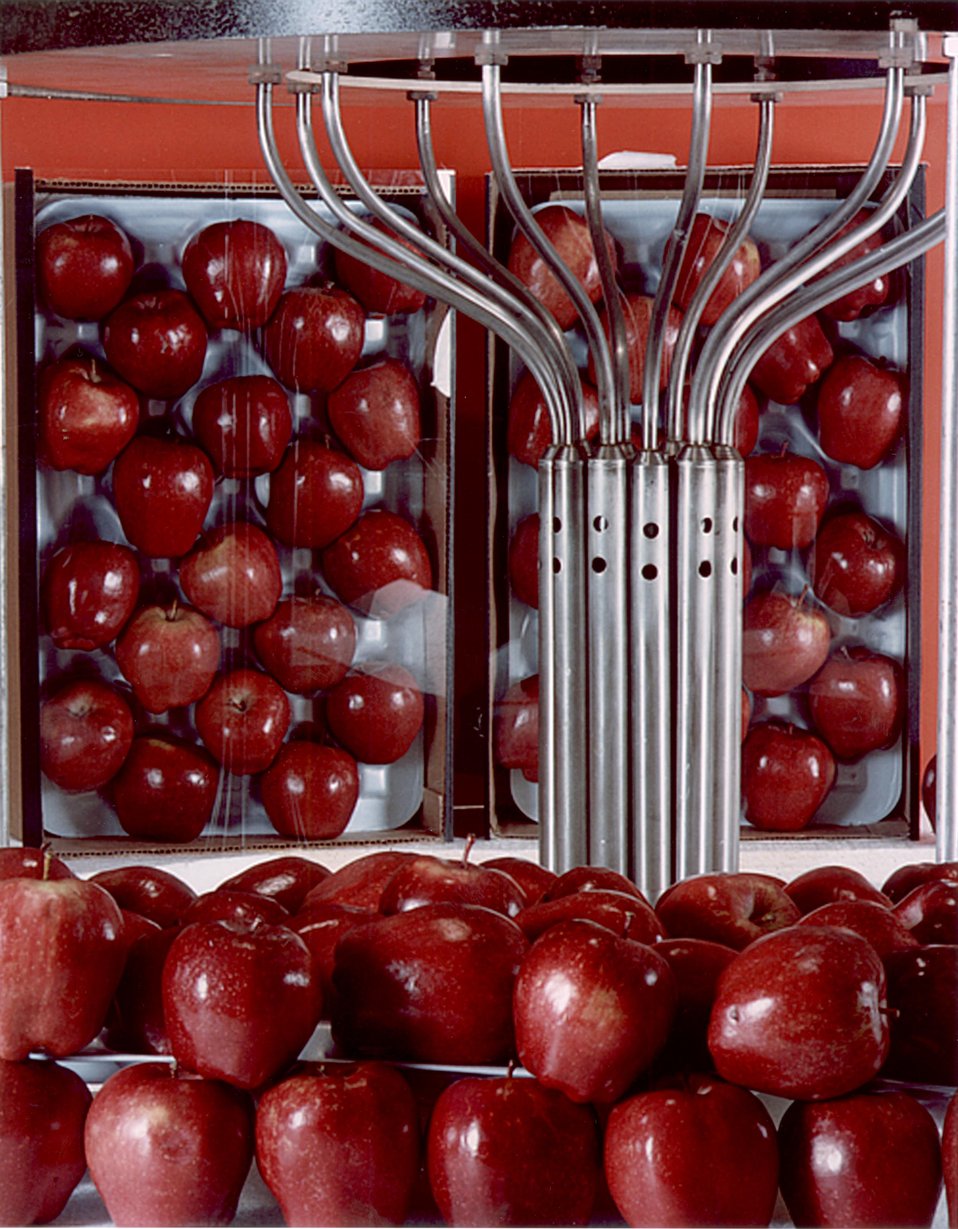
THIS COBALT-60 IRRADIATION FACILITY IS USED TO TEST IRRADIATION AS A TOOL FOR FOOD SAFETY.

FOOD IRRADIATION IS AN FDA APPROVED TECHNOLOGY THAT CAN BE USED TO CONTROL INSECTS IN FRUIT AND VEGETABLES, EXTEND THE SHELF LIFE OF FRESH PRODUCE, AND CONTROL PATHOGENIC ORGANISMS IN PRODUCTS SUCH AS POULTRY AND RED MEAT. PNNL HAS AN EXTENSIVE BASE OF EXPERIENCE IN FOOD IRRADIATION INCLUDING PRODUCT TESTING, ENVIRONMENTAL ASSESSMENT, FACILITY DESIGN, OPERATION, ECONOMIC ASSESSMENT.